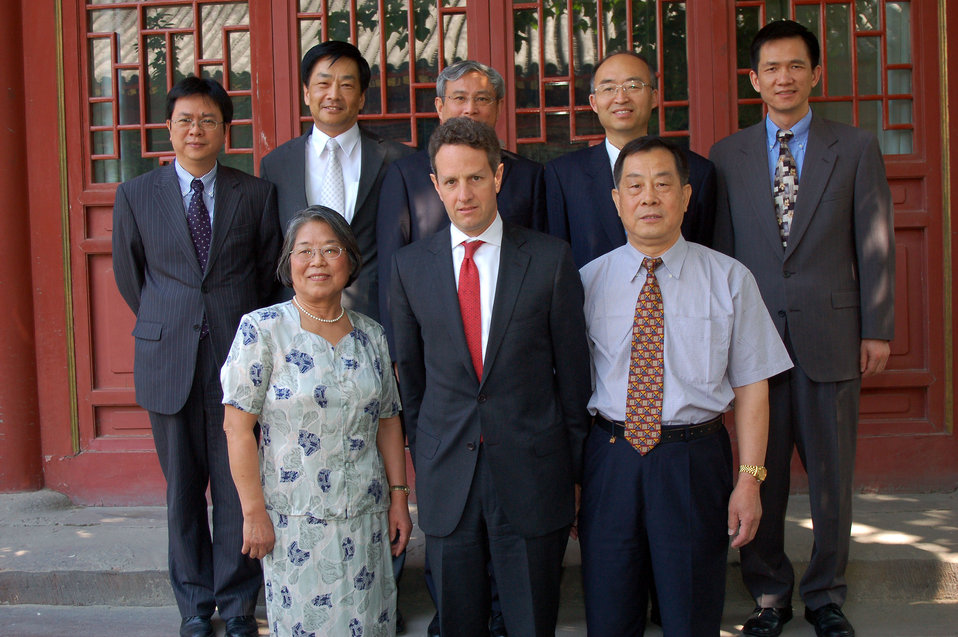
China trip: May 31-July 2 2009

Secretary Geithner with Peking University officials and past professors before his speech before students of Peking University.